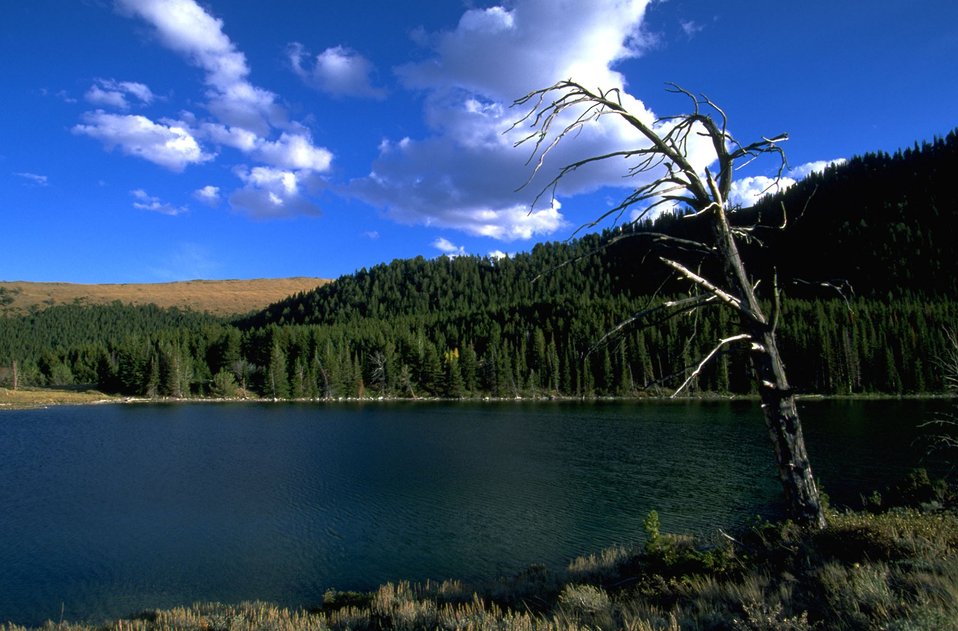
Axolotl Lake with dead tree in the foreground